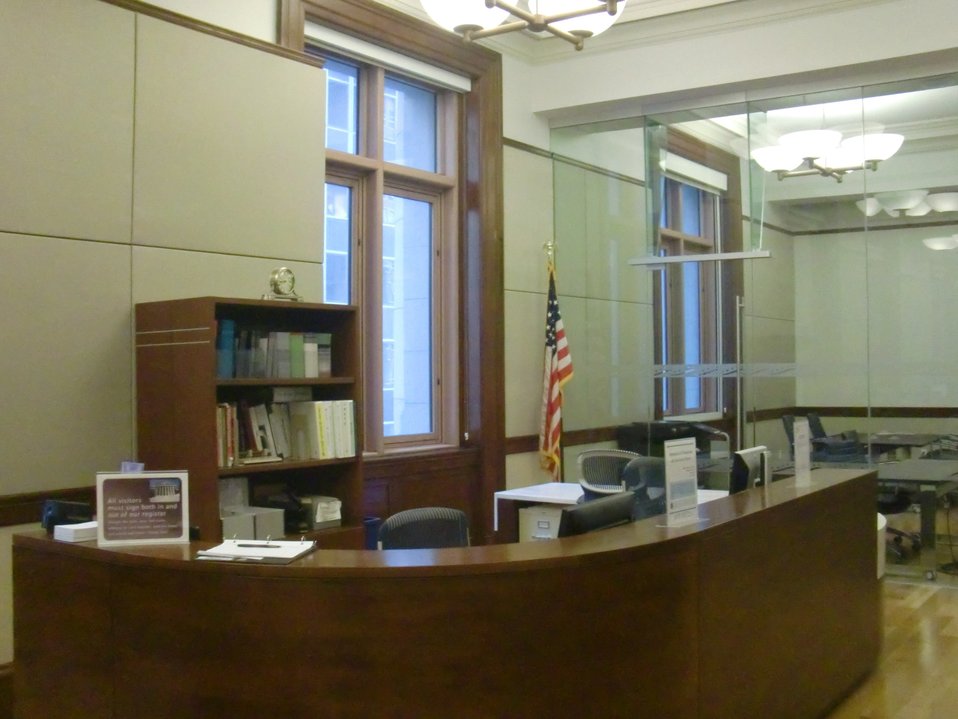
Reference Desk; Location: National Archives at New York, New York, New York